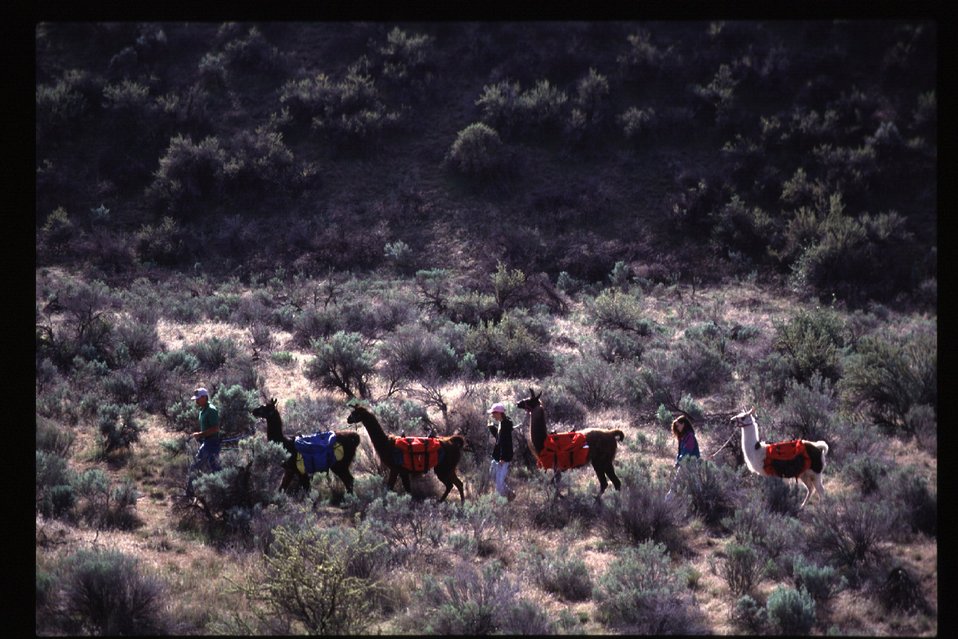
Rangeland and environmental education Boise Front Tending our Foothills Lamas Four Rivers Field Office LSRD Lower Snake River District